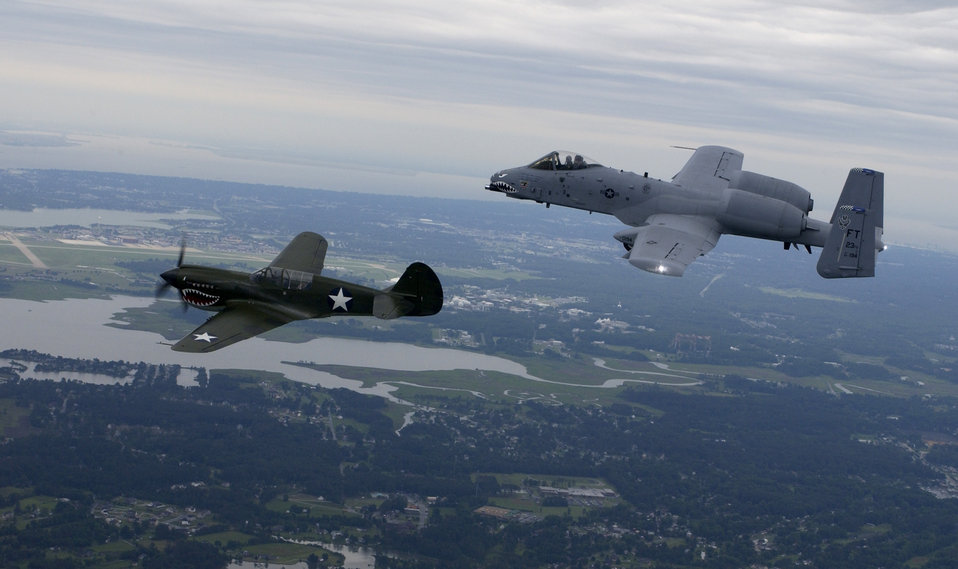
Past and present

OVER LANGLEY AIR FORCE BASE, Va. -- A P-40 Tomahawk and an A-10 Thunderbolt II fly in close formation here June 4. This formation represents the heritage between the 23rd Fighter Group of World War II which stood down to become the famous Flying Tigers, and the legacy which continues today. The P-40 was brought to Langley for the Flying Tigers reunion.